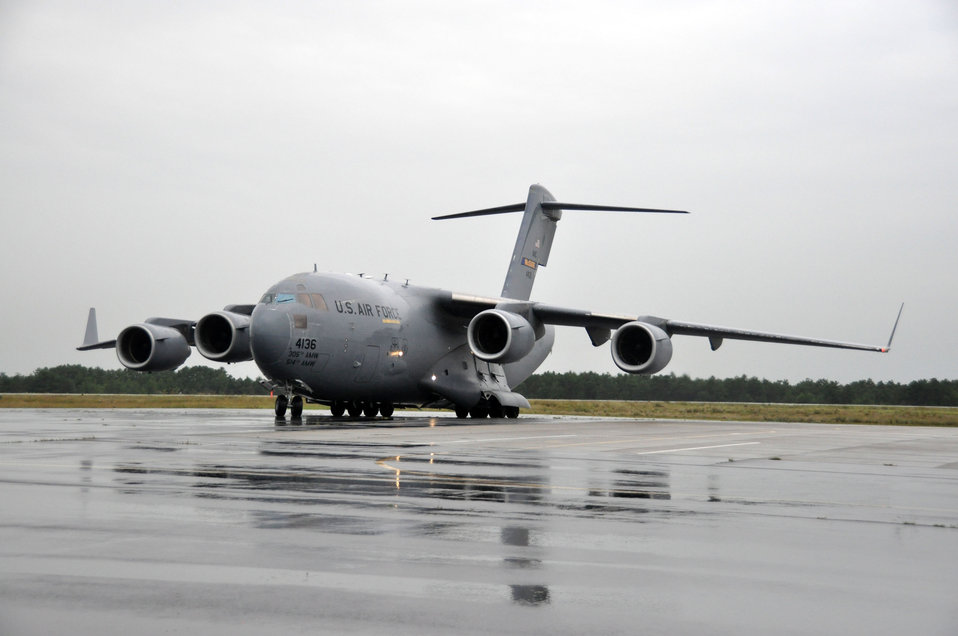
JTF-PO

A C-17 Globemaster III from the 305th Air Mobility Wing at McGuire Air Force Base, N.J., taxies on the runway at the Lakehurst Naval Air Station. The aircraft delivered cargo to Airmen and Soldiers with Joint Task Force-Port Opening, who are conducting a training exercise designed to test their ability to open and operate a deployed aerial port and forward supply node.